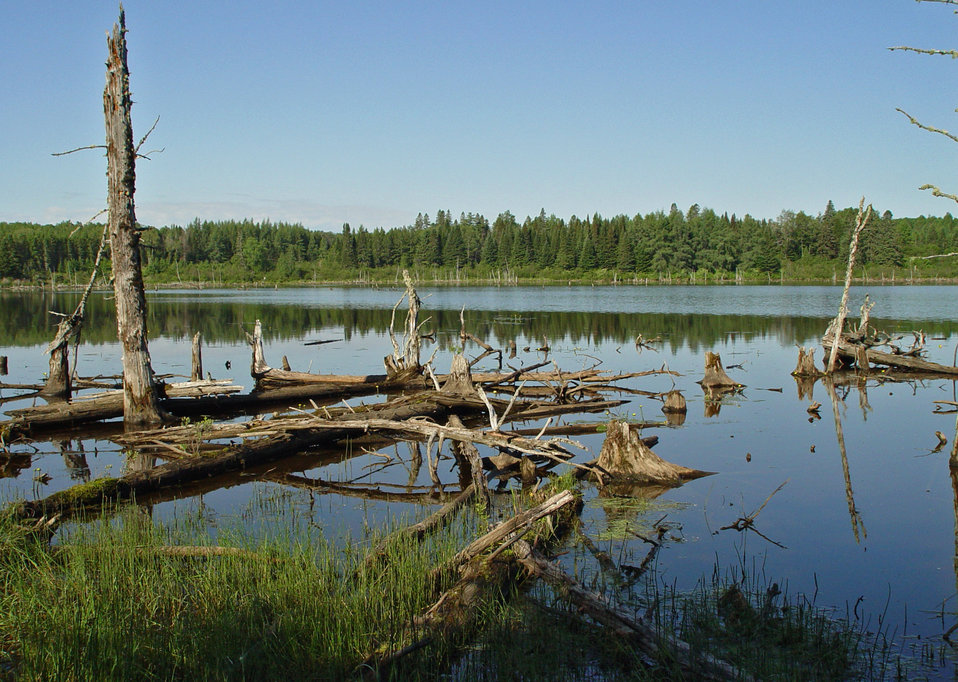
East Loring Lake

Aroostook National Wildlife Refuge, ME.